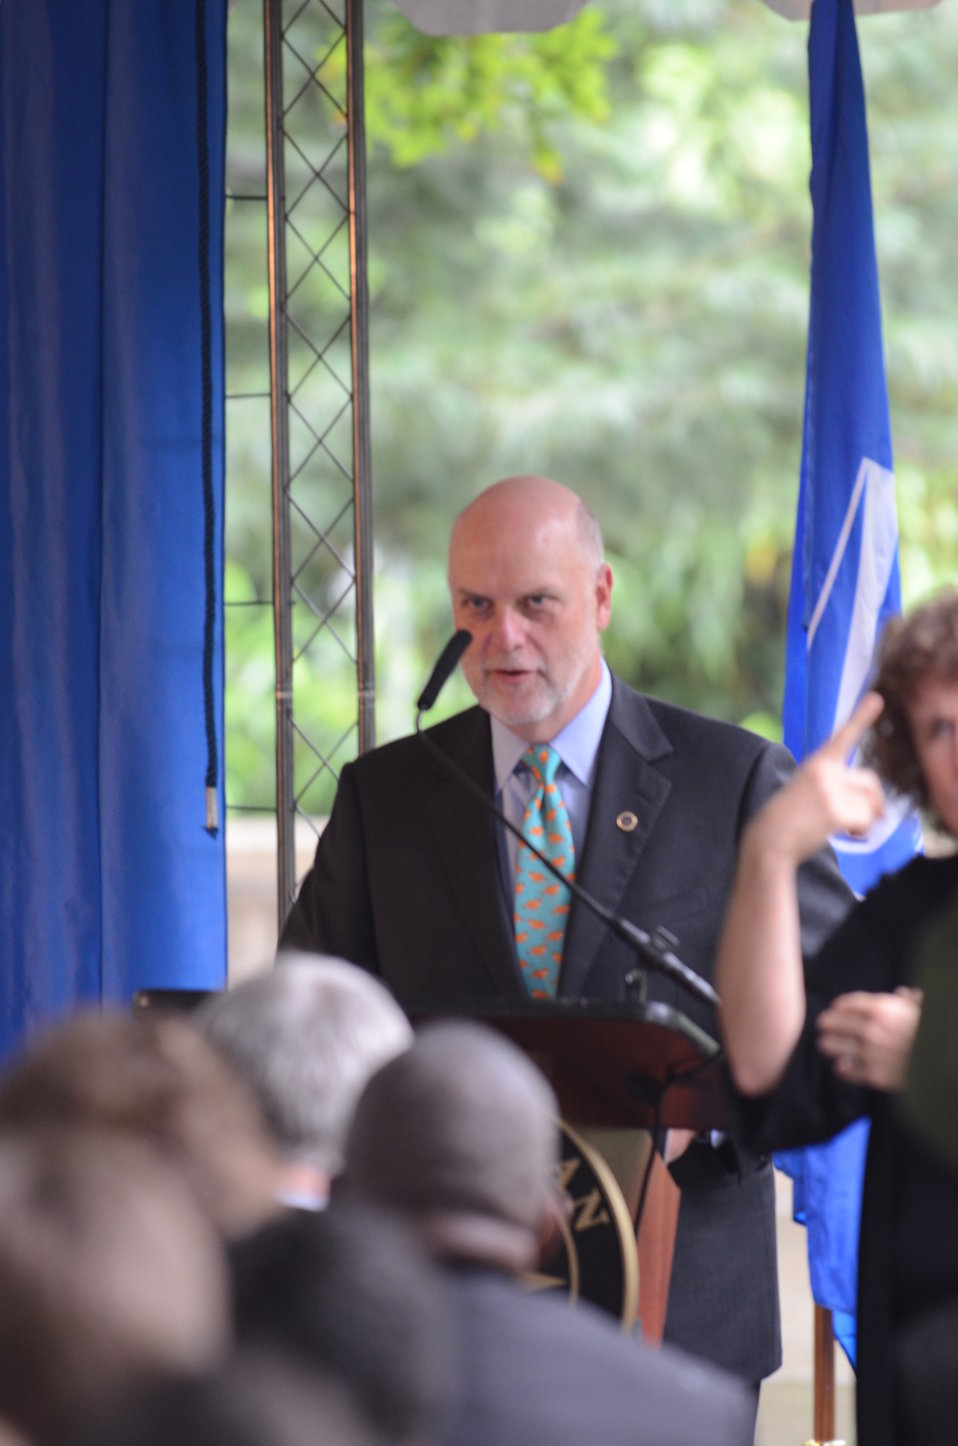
Save Vanishing Species Stamp First Day of Issue